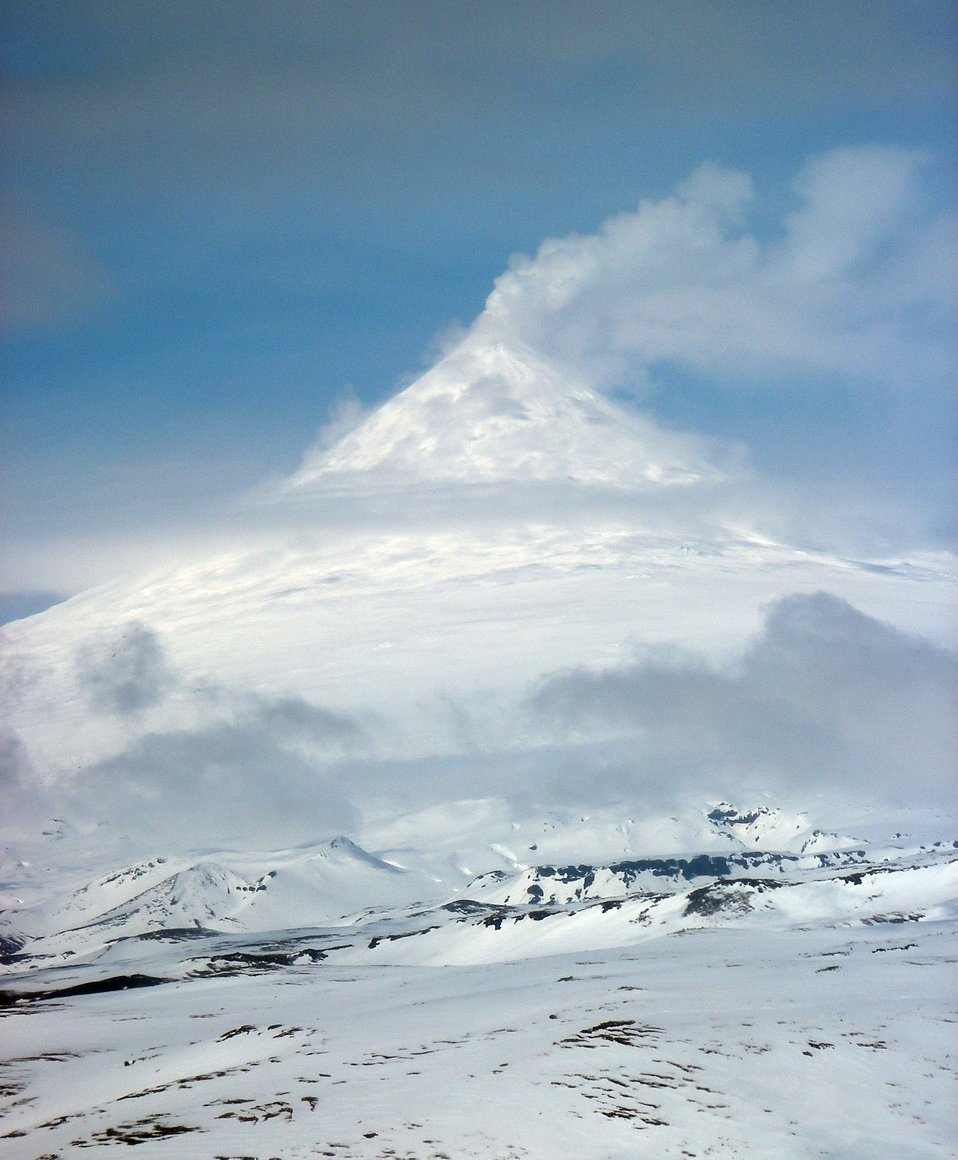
Shishaldin Volcano

Unimak Island, Alaska Maritime National Wildlife Refuge